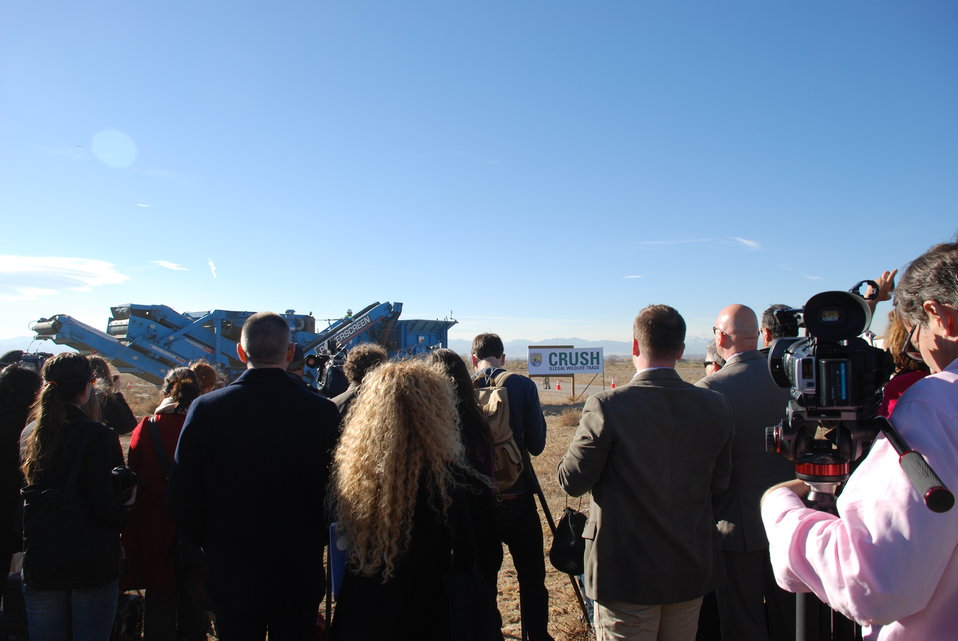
Ivory Crush 2013